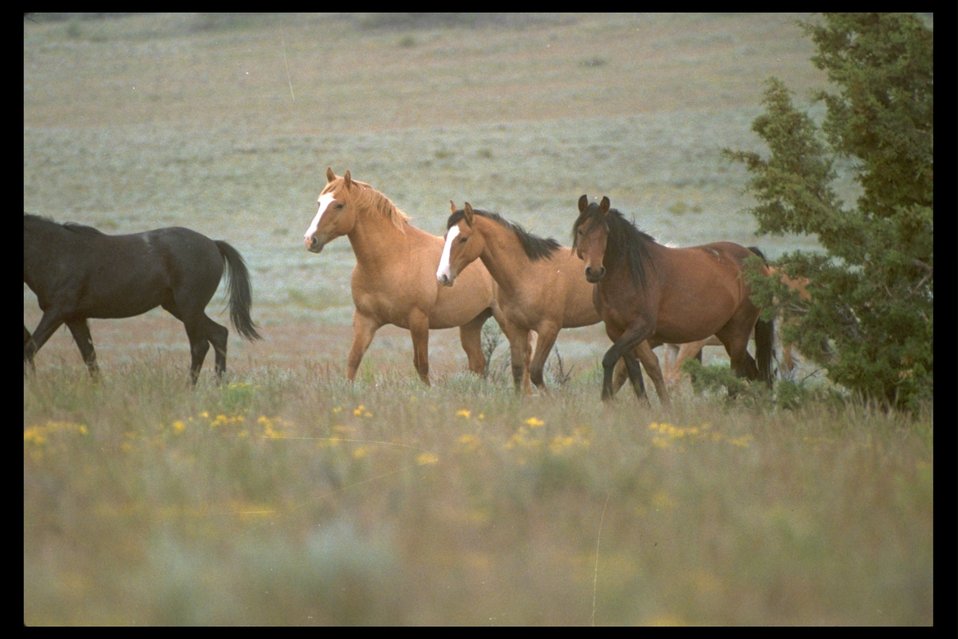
West Warmsprings horses on the range near "Lazarus" bend.